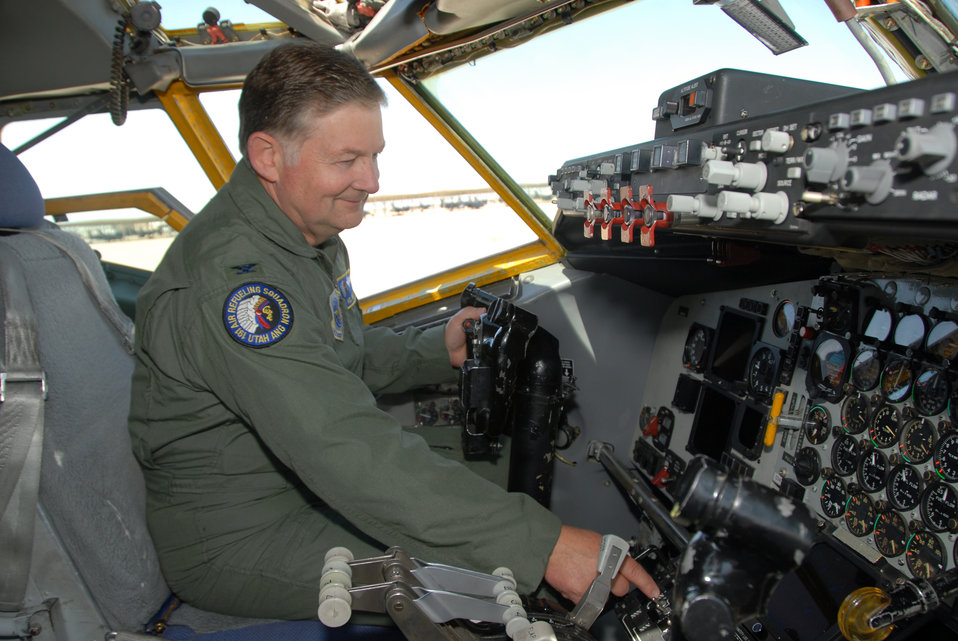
Farwell to Utah ANG's last KC-135 E-model

Col. Kelvin Findlay, 151st Air Refueling Wing commander, sits in the cockpit of the Utah Air National Guard's last KC-135 E-model Stratotanker before it was flown from the Air Guard base in Salt Lake City to nearby Hill Air Force Base where it was officially accepted into the Hill Aerospace Museum for public display.